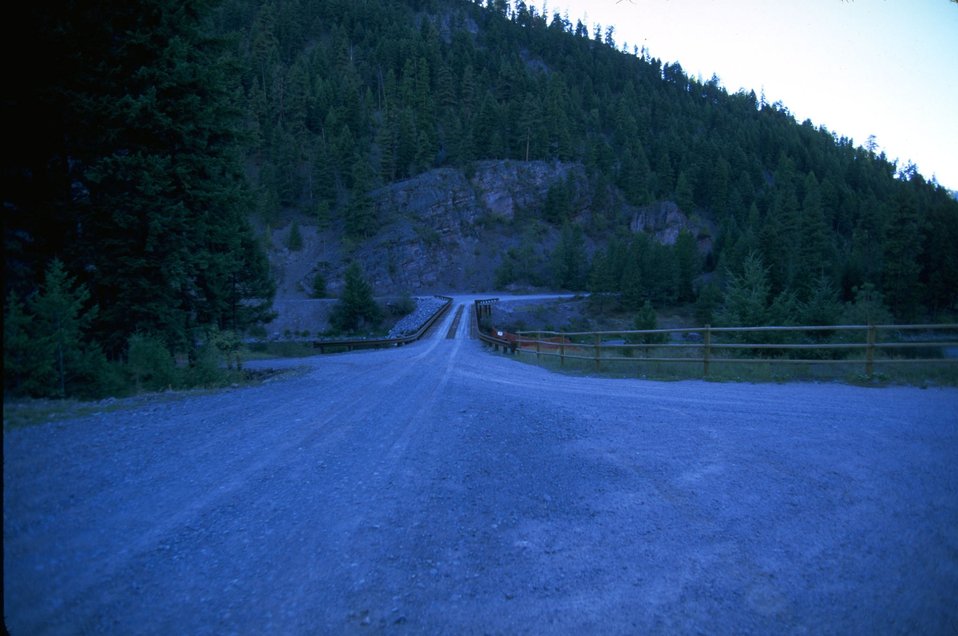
Whitaker Bridge over the Blackfoot River